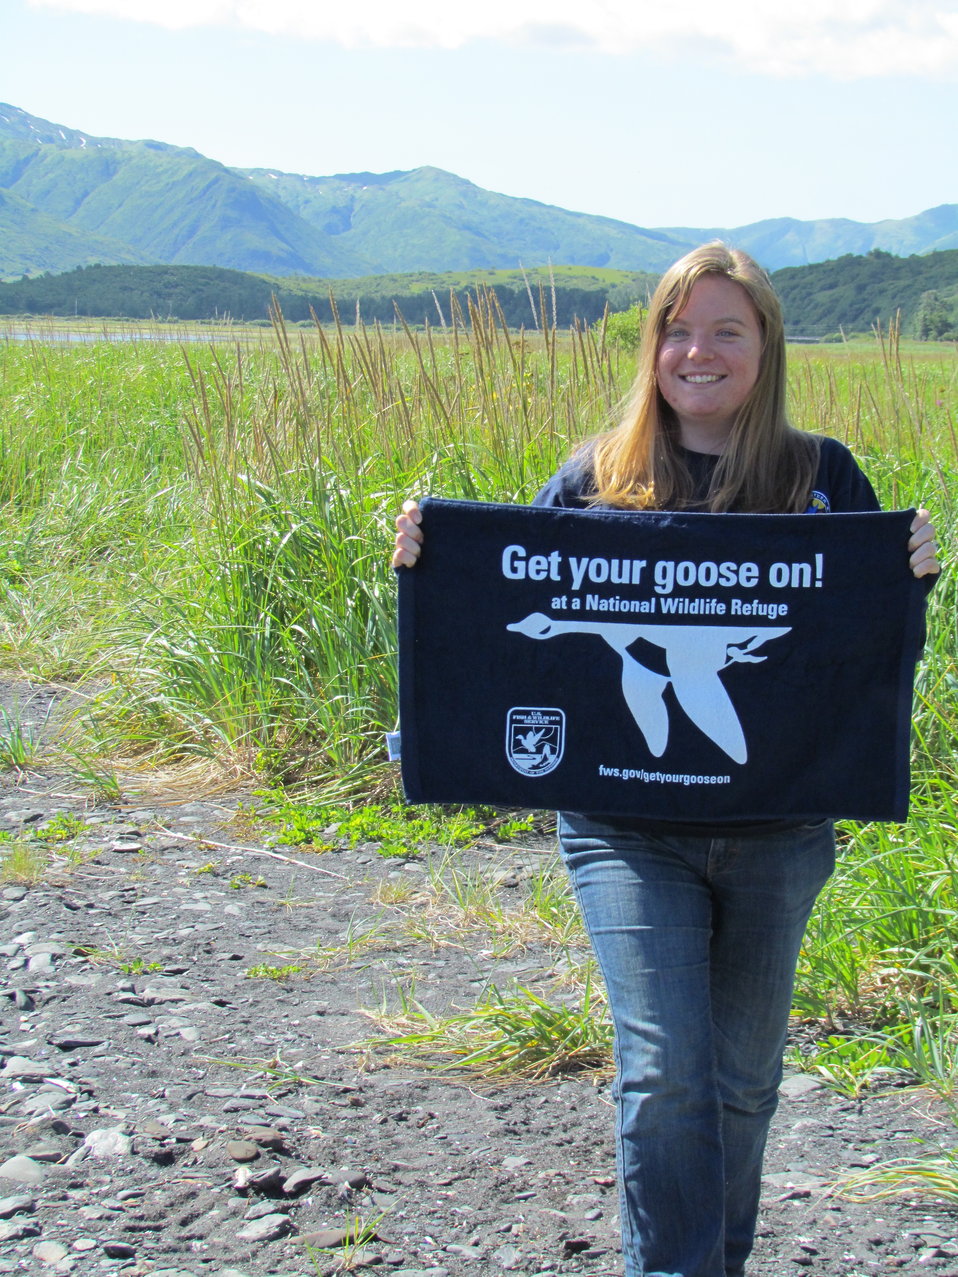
Get Your Goose On! - Alaska Style

Student Conservation Association intern, Ali Sutton

Credit: Shelly Lawson / USFWS

The Kodiak National Wildlife Refuge is a United States National Wildlife Refuge in the Kodiak Archipelago in southwestern Alaska, United States.

The Kodiak National Wildlife Refuge includes the southwestern two-thirds of Kodiak Island, Uganik Island, the Red Peaks area of Afognak Island and all of Ban Island in the archipelago. It encompasses 1,990,418 acres (8,054.94 km2).[2] The refuge is administered from offices in Kodiak.

The refuge contains seven major rivers and about 100 streams. It is a spawning ground for all six species of Pacific Ocean salmon, trout and several other fish species, as well as a nesting ground for 250 species of bird, many of which feed on salmon. The refuge has only six native species of mammals: Kodiak brown bear, red fox, river otter, ermine, little brown bat and tundra vole. The non-native mammals Sitka deer, mountain goat, Roosevelt elk, snowshoe hare and beaver were introduced to the archipelago between the 1920s and 1950s and are now hunted and trapped.

The climate of the refuge is that of southern Alaska, mild and rainy. Many areas in the refuge are densely forested with Sitka Spruce at lower elevations. There are grasslands in drier areas and at higher elevations. The refuge contains several small glaciers.